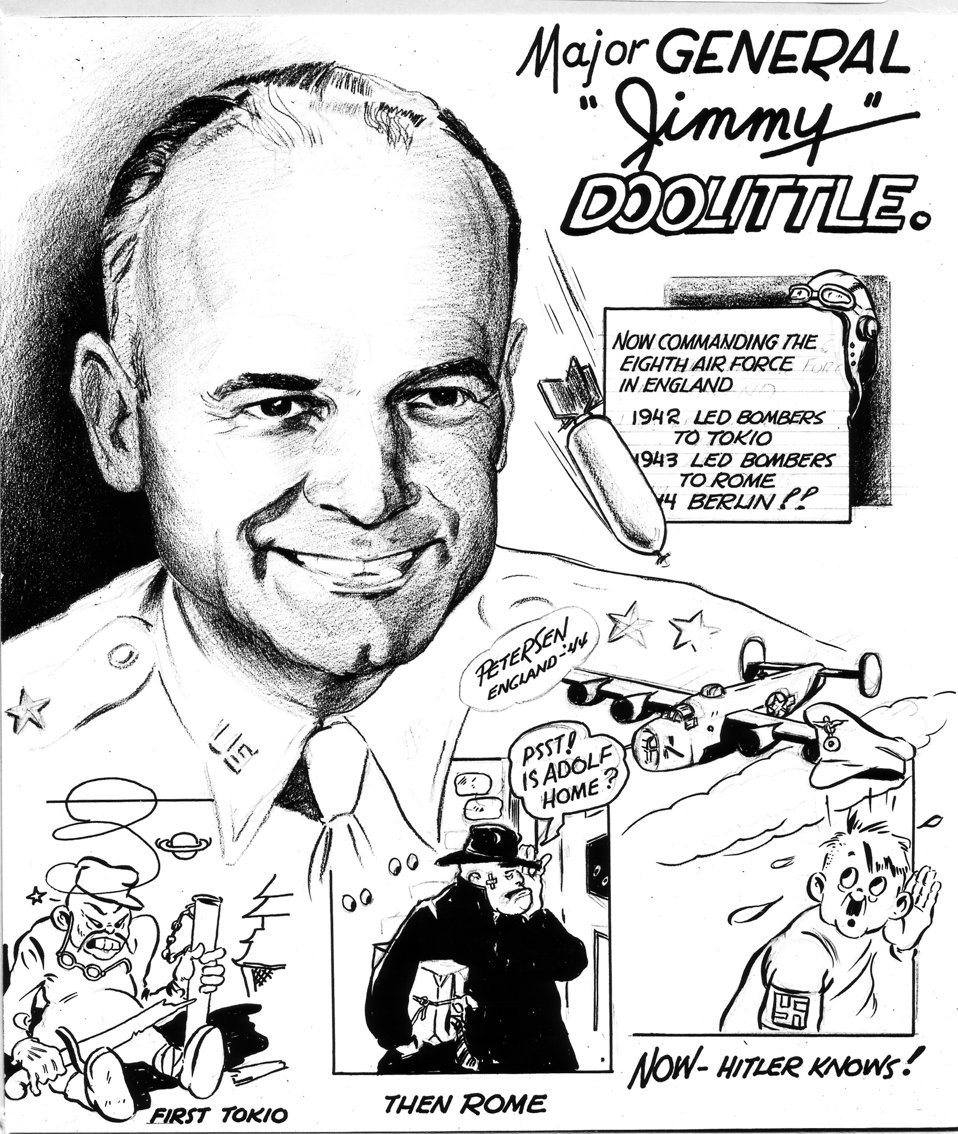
Maj. Gen. James H. Doolittle

War-time caricature of Maj. Gen. James H. Doolittle and his accomplishments, artist unknown.